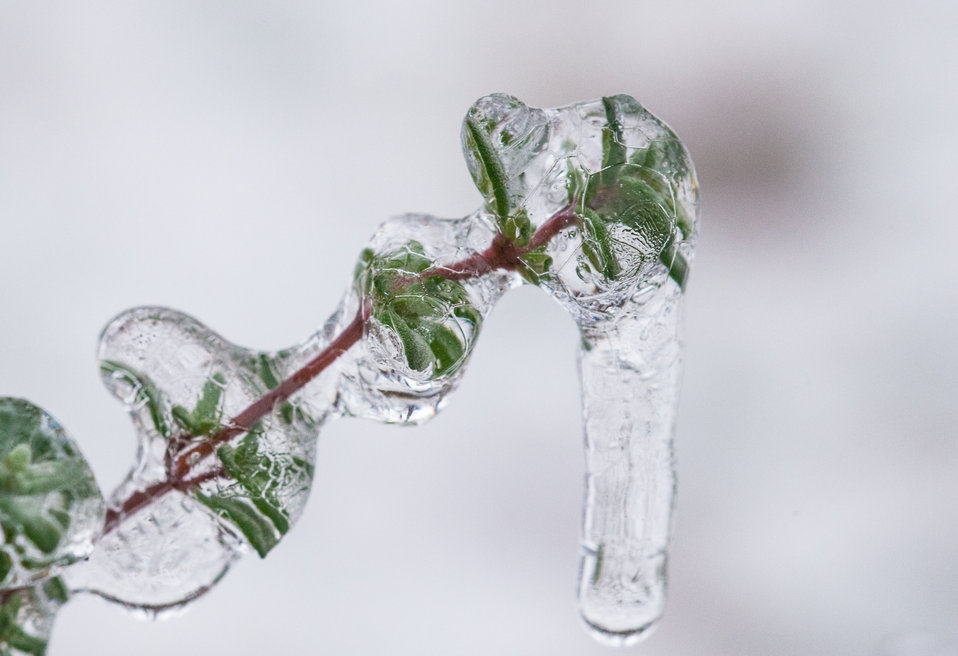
Freezing rain covers plants and trees in Falls Church, VA on Monday, Dec. 9, 2013.